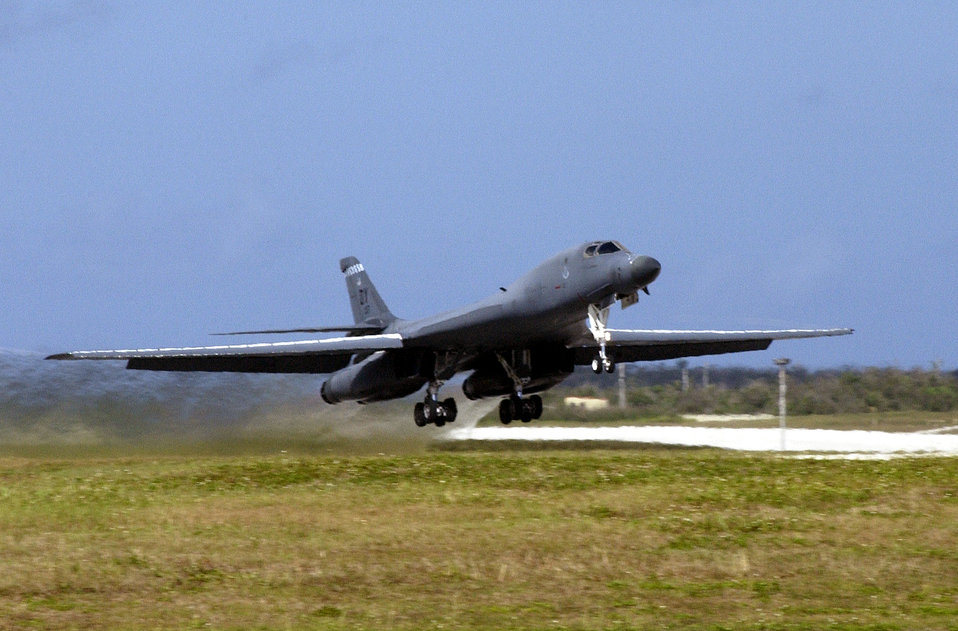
Lancer lift off

ANDERSEN AIR FORCE BASE, Guam -- A B-1 Lancer bomber deployed from Dyess Air Force Base, Texas takes off here on April 2. B-1 and B-52 Stratofortress aircraft and people are deployed here as a show of force for the Pacific region.